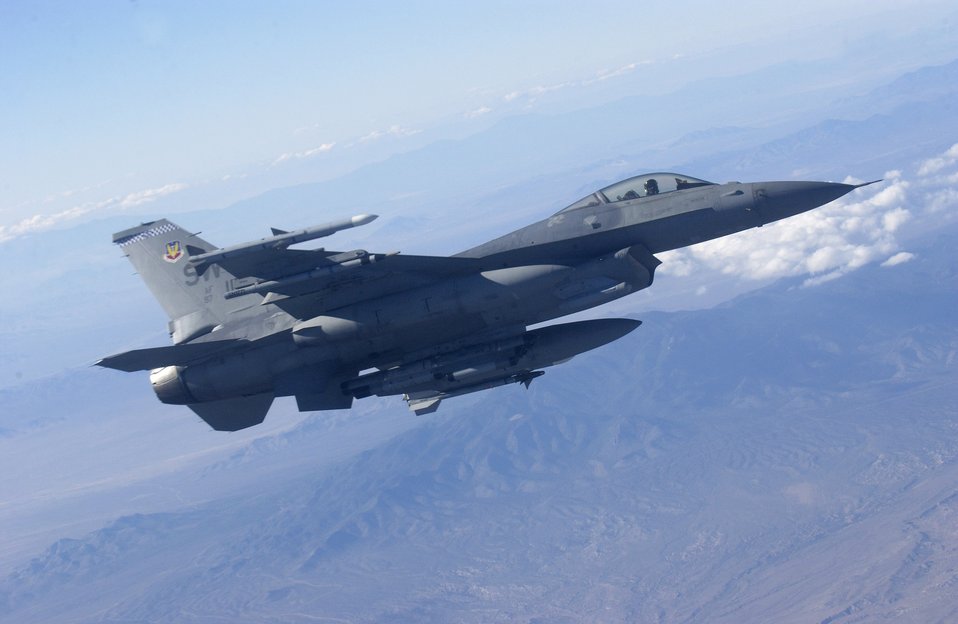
Red Flag kicks off at Nellis

An F-16 Fighting Falcon flies over Nevada Oct. 11 during Red Flag 07-1 being held at Nellis Air Force Base, Nev. Red Flag runs Oct. 10 to 20 and tests aircrews' warfighting skills in realistic combat situations. The aircraft will be flying missions during the day and night at the nearby Nevada Test and Training Range where they will simulate an air war. U.S. servicemembers, with representatives from each branch of service along with coalition forces, are participating in Red Flag.